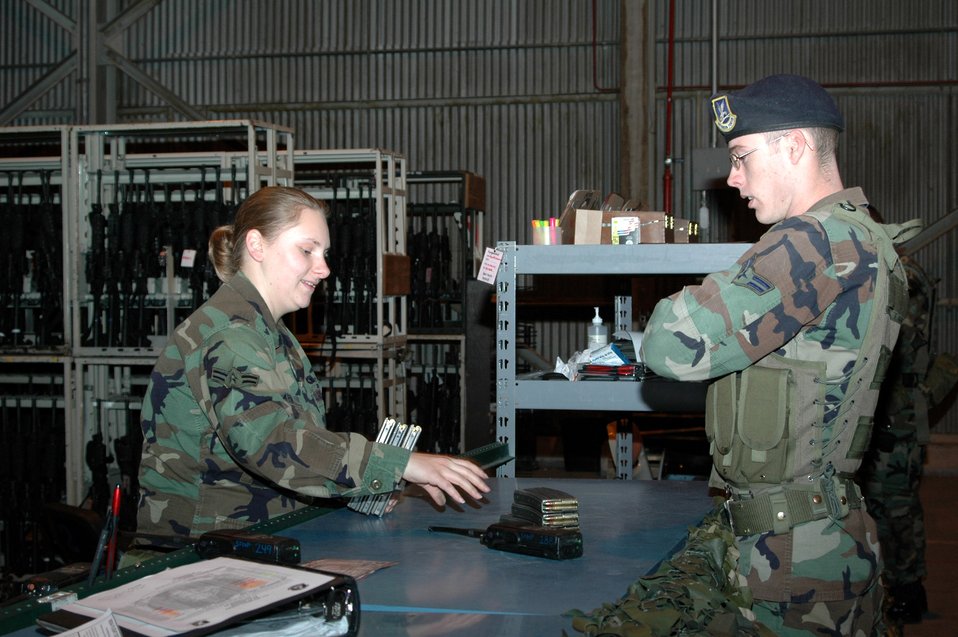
Serving through the season: Airman 1st Class Amber Roaten

Airman 1st Class Amber Roaten, an armorer with the 341st Security Support Squadron at Malmstrom Air Force Base, Mont., accepts ammunition turned in by a security forces member after his shift Dec. 8.